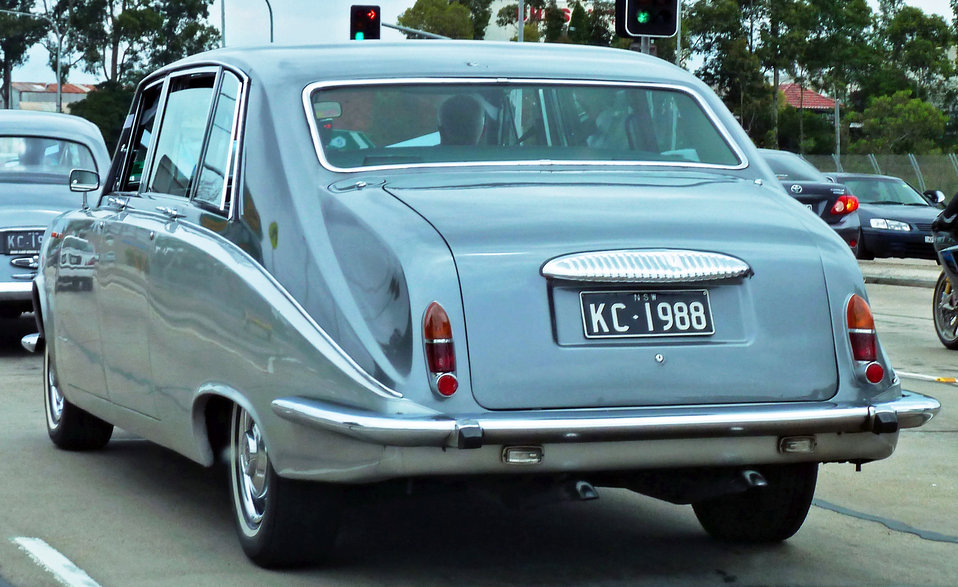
1981 Daimler DS420 sedan, photographed in Padstow, New South Wales, Australia.